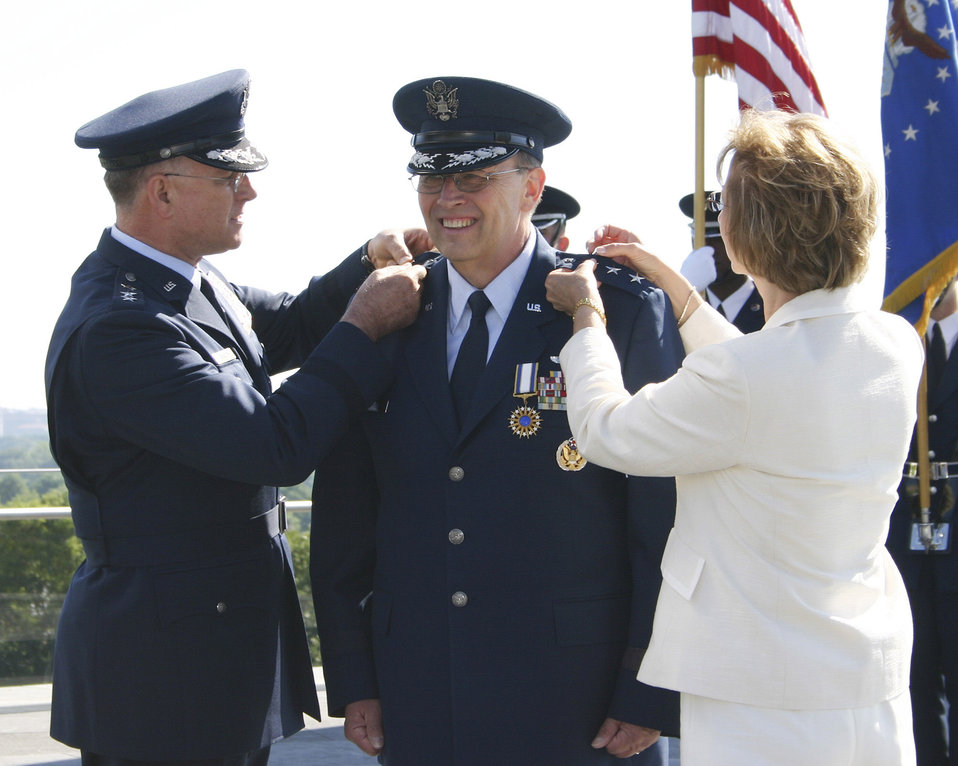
Stenner takes reins of Air Force Reserve

Lt. Gen. John A. Bradley, left, outgoing chief of Air Force Reserve Command, pins a third star on the epaulet of Lt. Gen. Charles Stenner Jr.; while Mrs. Dee Stenner pins the epaulet on the other side. The promotion ceremony was at the Air Force Memorial in Arlington, Va., June 24.